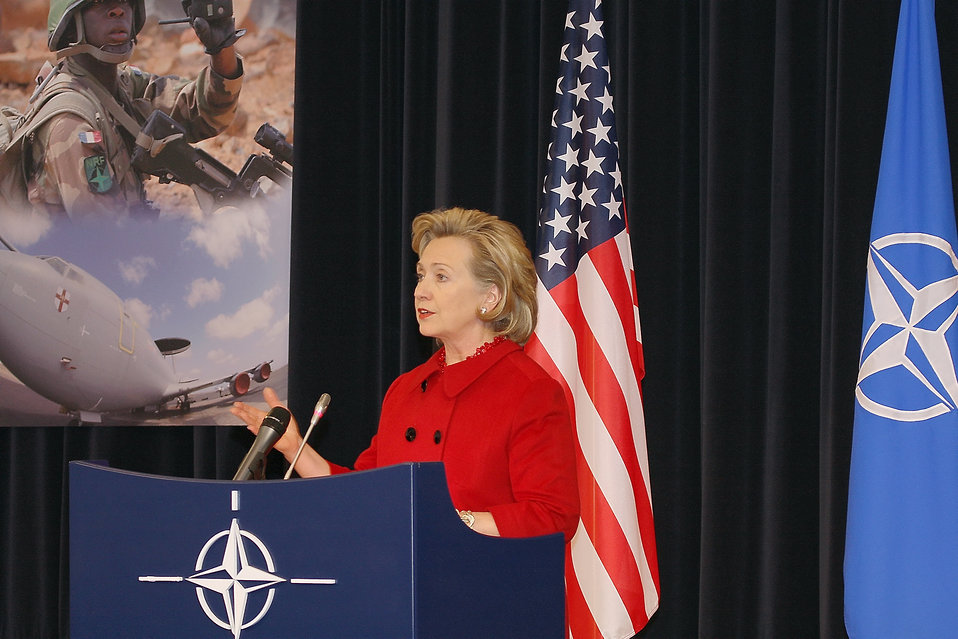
NATO Press Conference

U.S. Secretary of State Hillary Rodham Clinton meets with Belgian officials at Val Duchesse in Brussels, Belgium December 4, 2009.